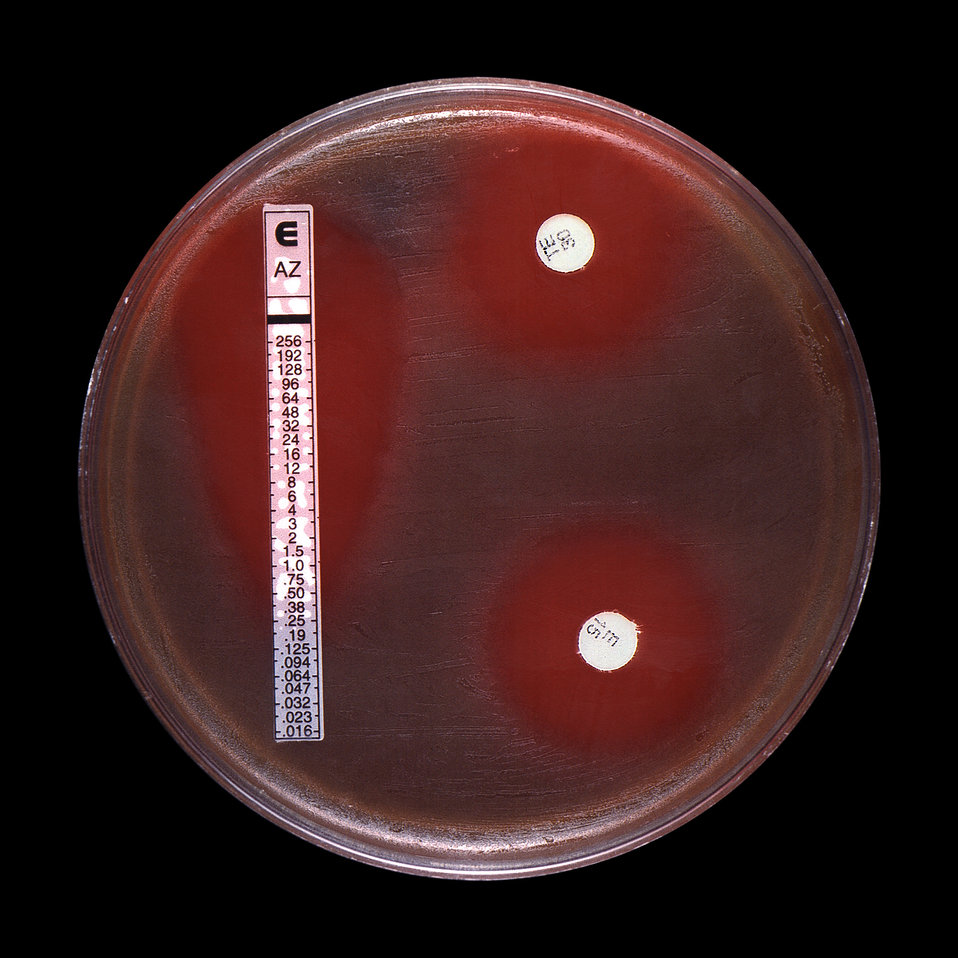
Antimicrobial Susceptibillity Test-E Test� and Disk Diffusion